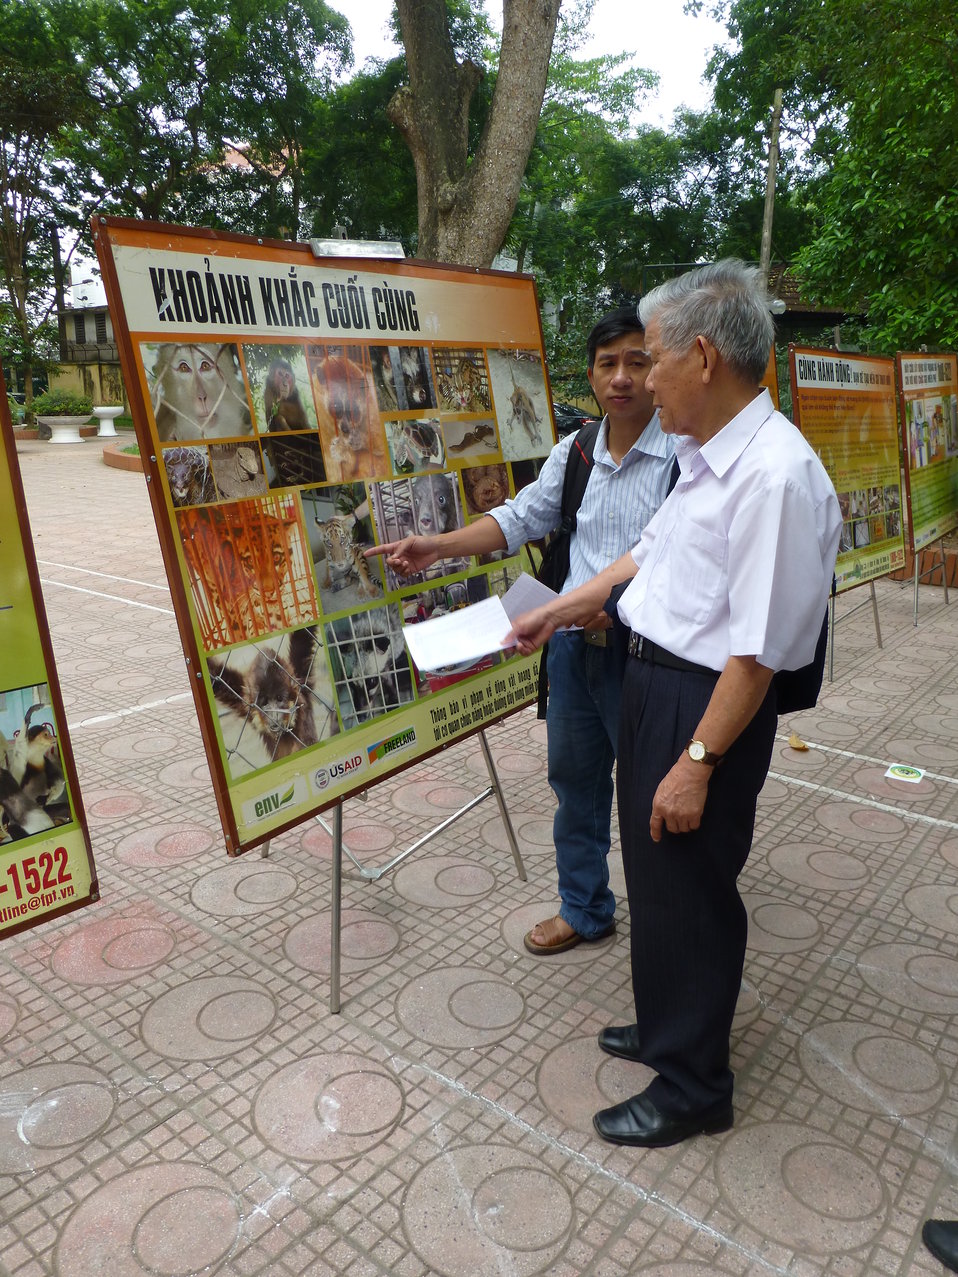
USAID Supports International Day for Biological Diversity in Hanoi